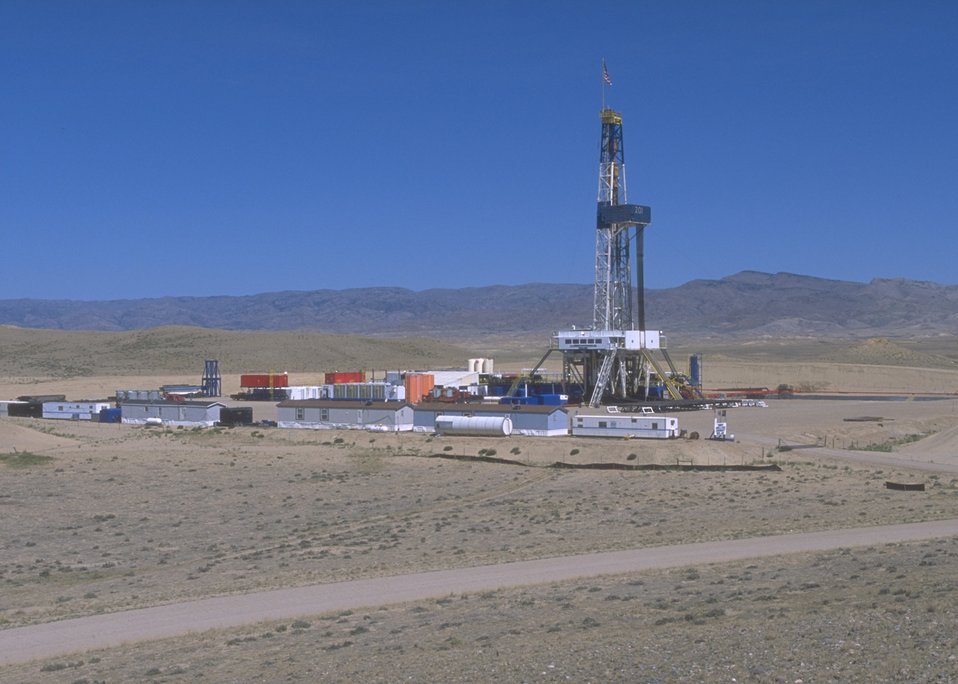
Burlington Northern deep well rig, Casper Field Office.